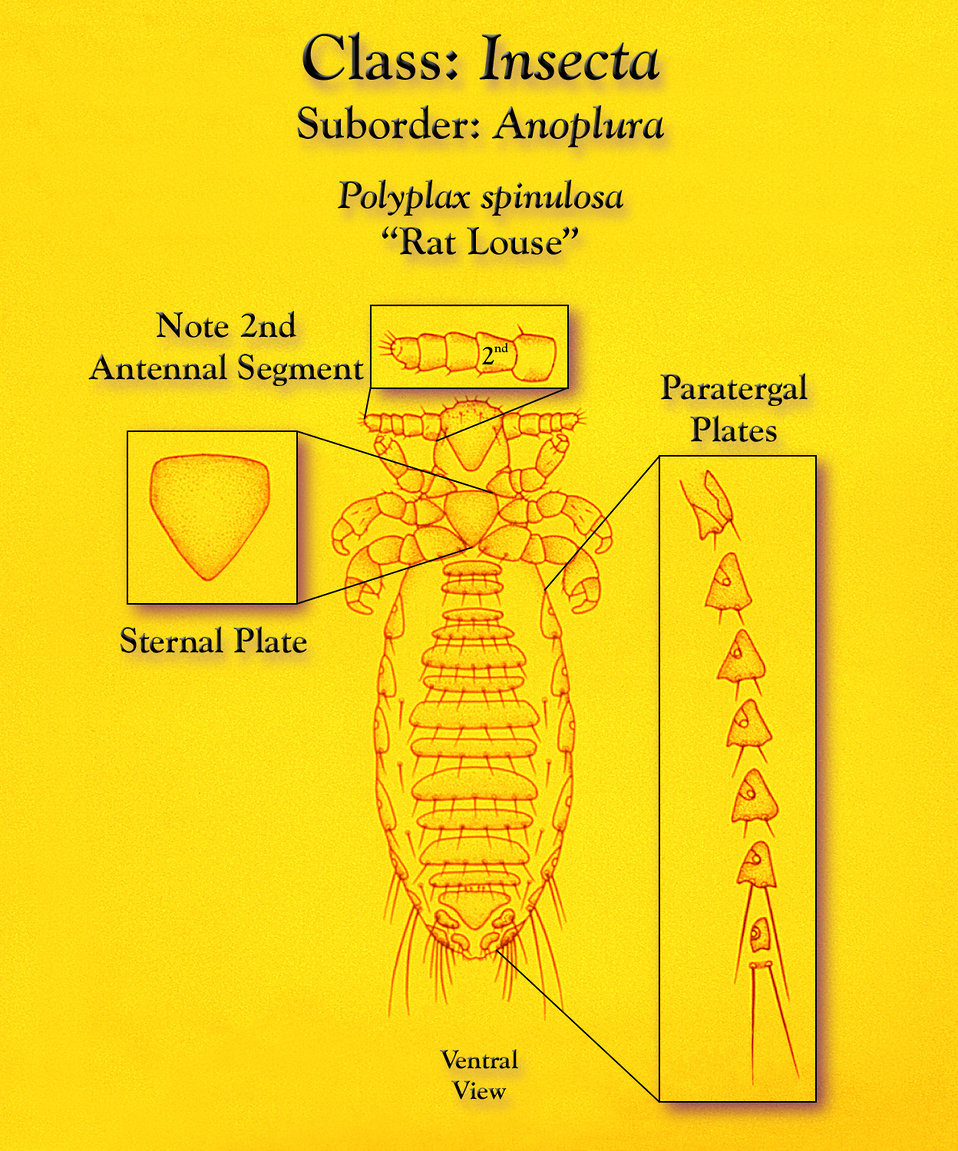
This illustration depicts a number of identifiable morphologic characteristics of the 'rat louse', Polyplax spinulosa from a ventral view, as well as three insets that highlight three distinct morphologic features unique to this genus.